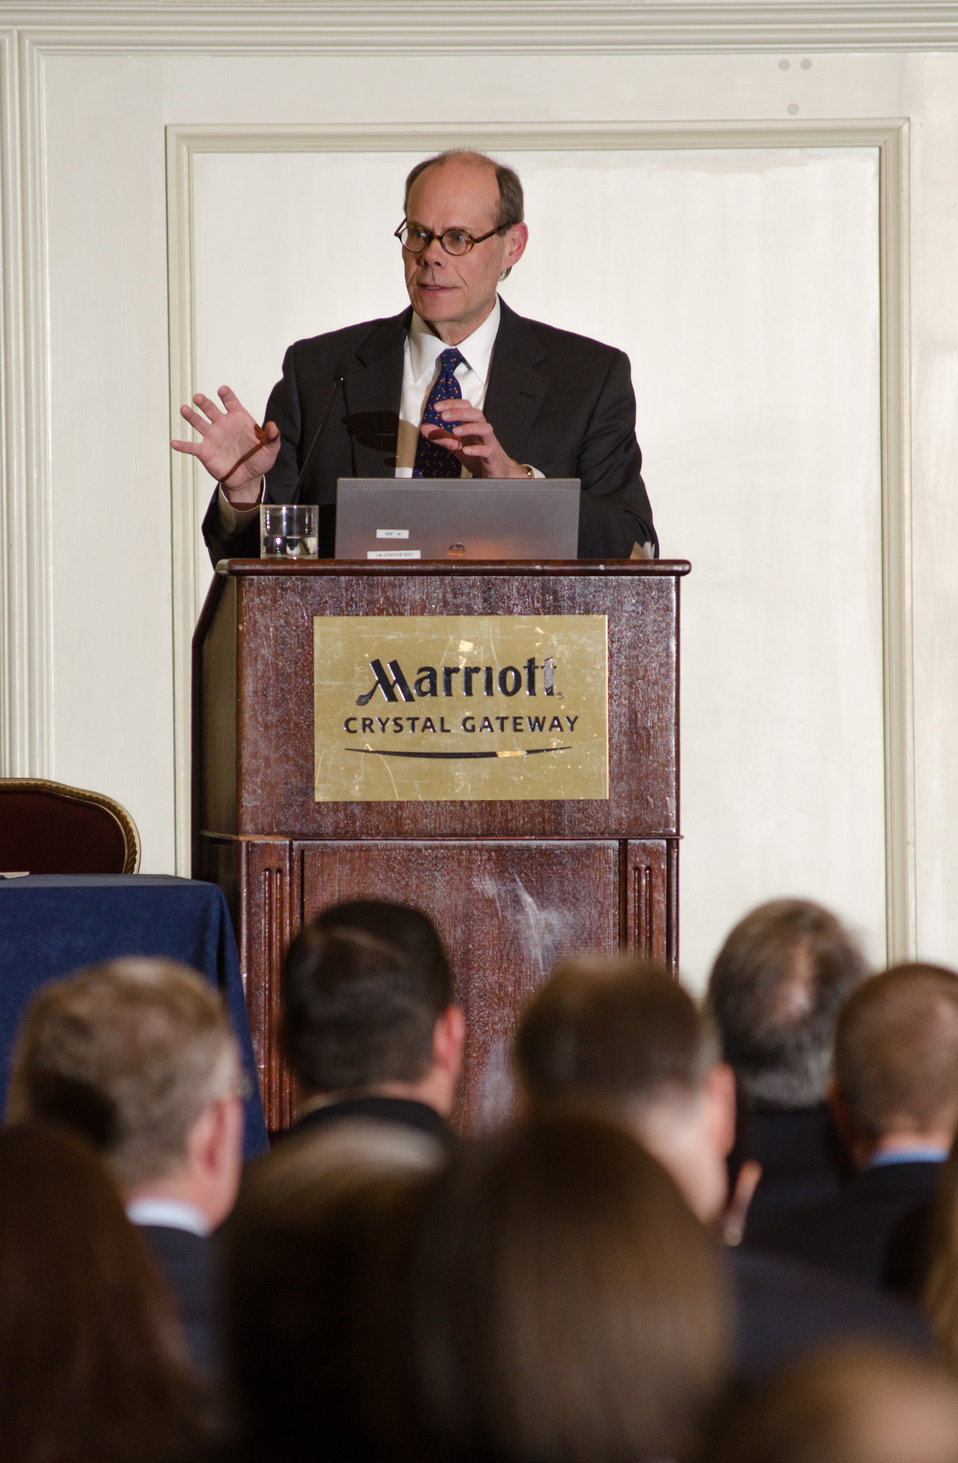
U.S. Meat Export Federation’s Thad Lively spoke about EU Trade Barriers and U.S. Meat Exports at the 2013 Agricultural Outlook Forum, held at the Crystal Gateway Marriott Hotel, Arlington, Virginia on Thursday, Feb. 21, 2013. This annual Forum brings together producers, policymakers, and business, government, and industry leaders to meet, exchange ideas, and discuss timely agriculture issues.